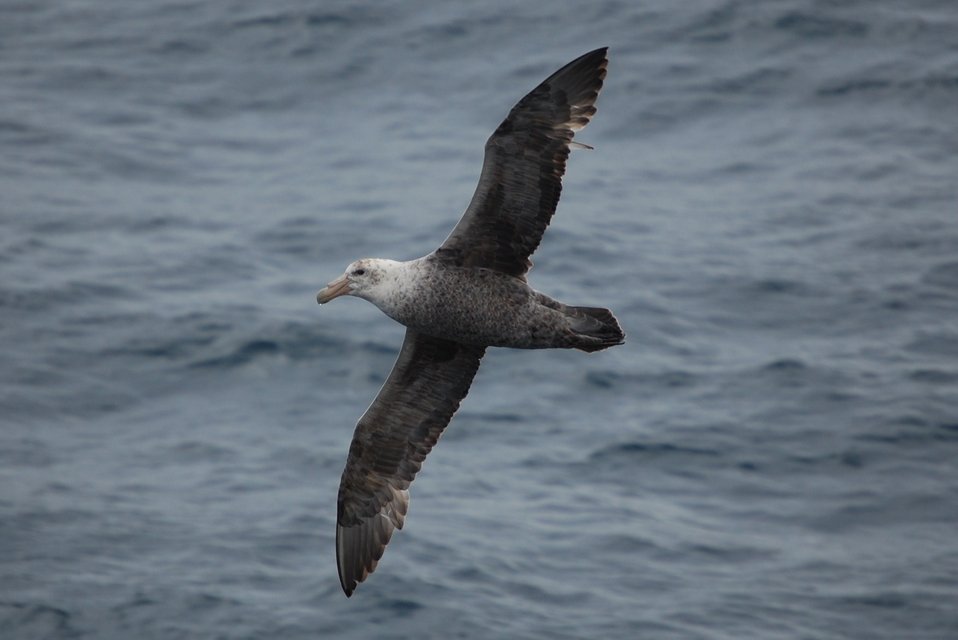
Southern giant petrel.